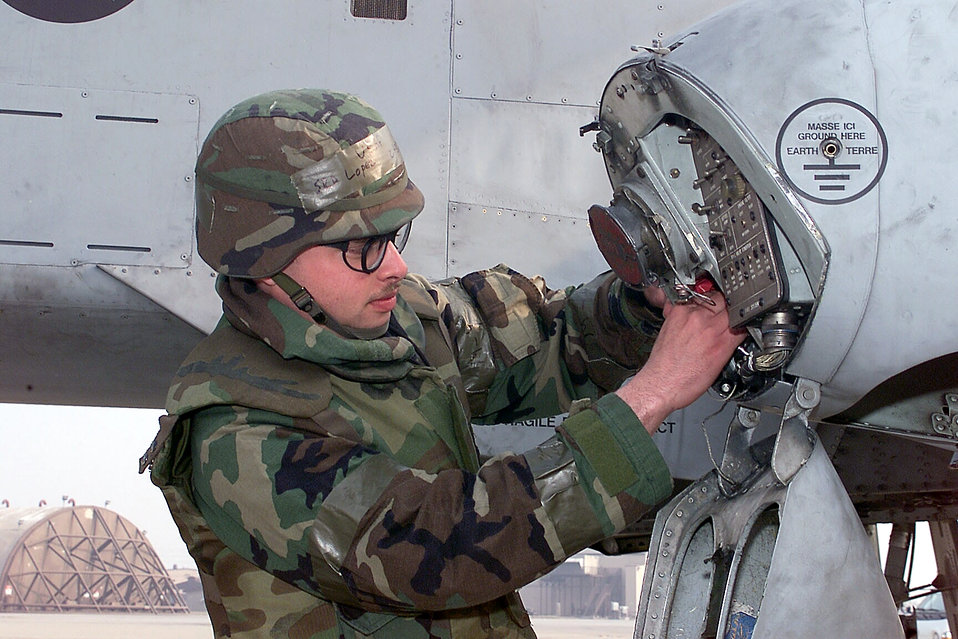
Stow away

OSAN AIR BASE, South Korea -- Senior Airman Luis Lopez stows gear pins during a preflight check on an A-10 Thunderbolt II during exercise Beverly Bulldog 04-01 here March 22. Airman Lopez is a maintenance specialist with the 25th Aircraft Maintenance Unit.